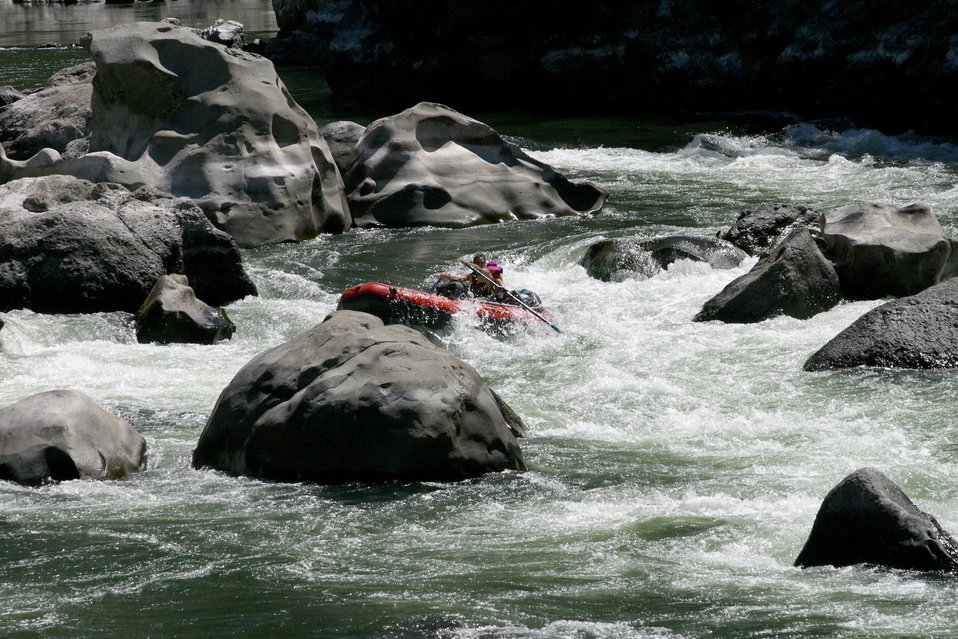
Boaters negotiate Blossom Rapids.